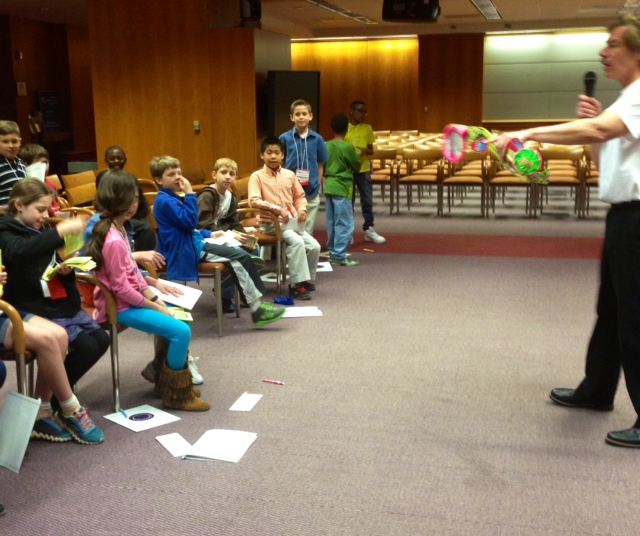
4.24.2014 Take Your Child to Work Day

Career Day Kids playing games in the FCC Commission Meeting Room.